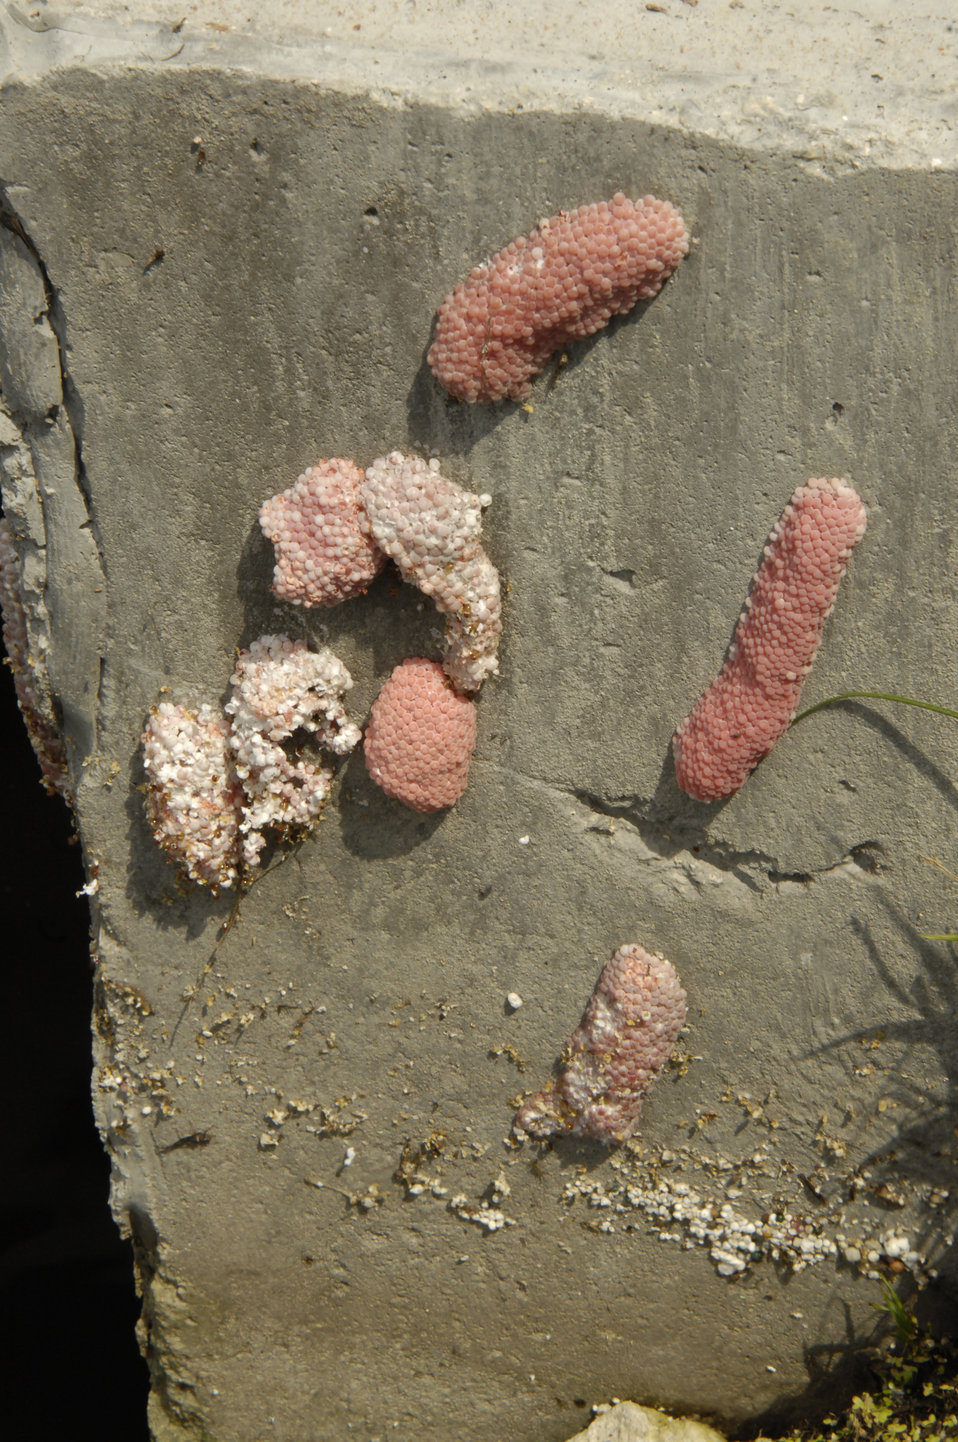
Egg masses from the Island apple snail (Pomacea insularum) lay on a concrete piling in Everglades National Park on April 8, 2010. The Island apple snail is a considered an invasive exotic species that competes directly with the American native apple snail. A species is considered invasive if it is nonnative to the ecosystem and its introduction causes or is likely to cause economic or environmental harm or harm to human health. The goal of the U.S. Department of Agriculture’s (USDA) Forest Service (FS) invasive species program is to reduce, minimize, or eliminate the potential for introduction, establishment, spread, and impact of invasive species across all landscapes and ownerships.